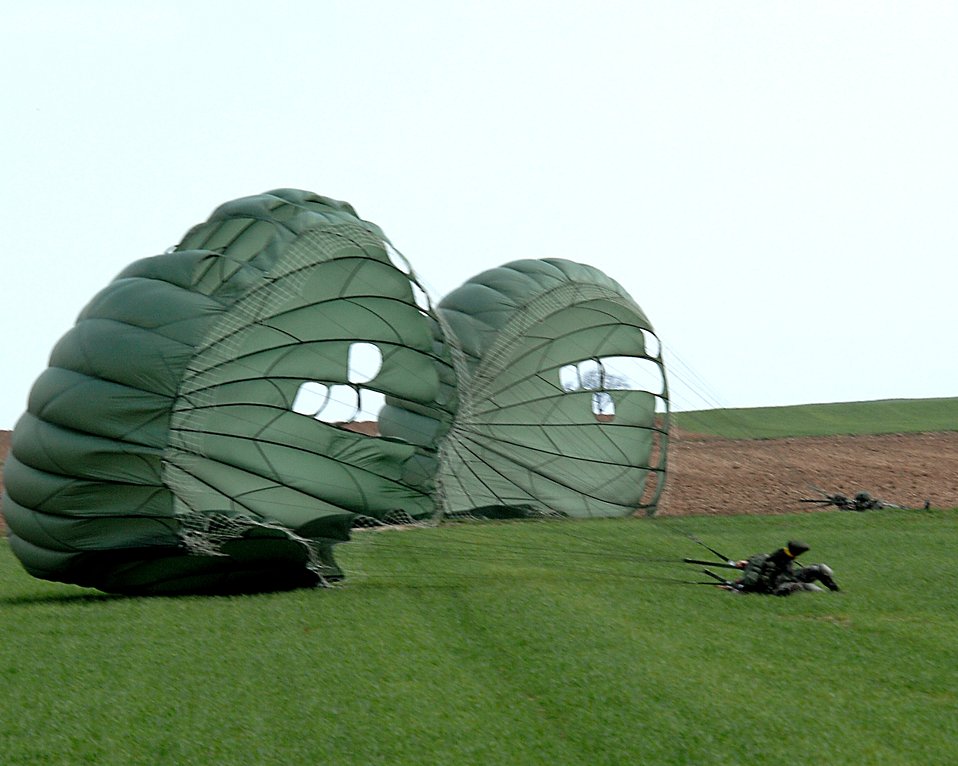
Airborne over Deutschland

Airmen of the 786th Security Forces from Sembach Annex, Germany reach the ground after parachuting March 8 off the back ramp of a C-130 Hercules during a tactical training exercise over southwestern Germany.